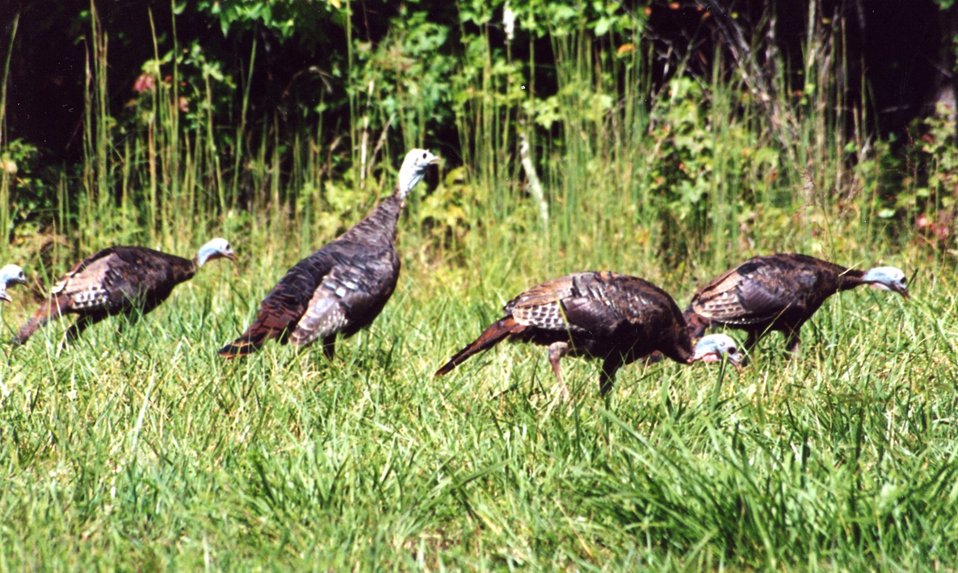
Wild turkeys.